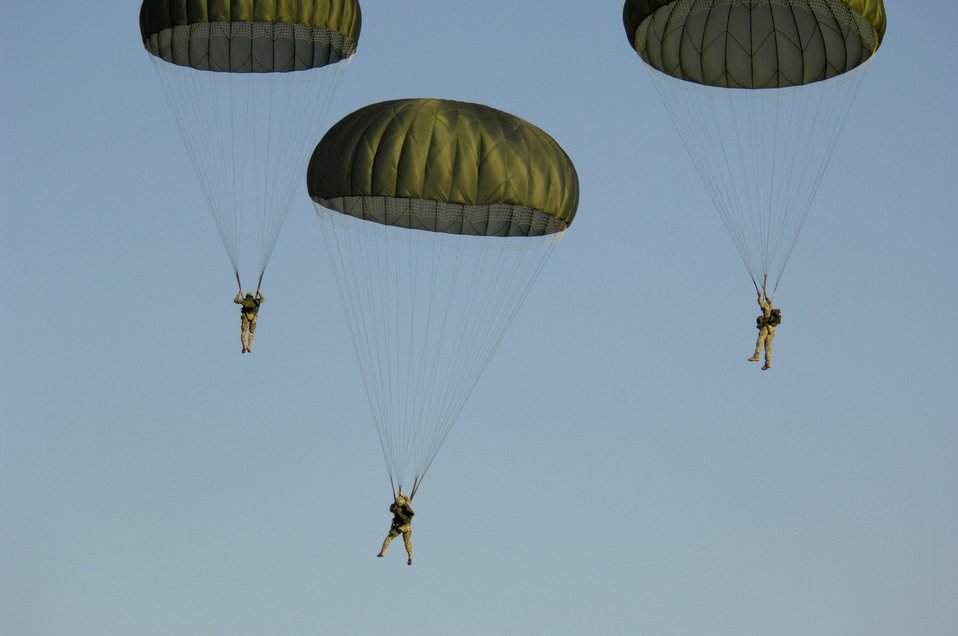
Hercules, Globemaster IIIs support joint training

Paratroopers from the 82nd Airborne Division jump from a C-17 Globemaster III during Joint Forcible Entry Exercise June 18 at Fort Bragg, N.C. The exercise is a joint airdrop exercise designed to enhance service cohesiveness between Army and Air Force members, allowing both services an opportunity to properly execute large-scale heavy equipment and troop movement.